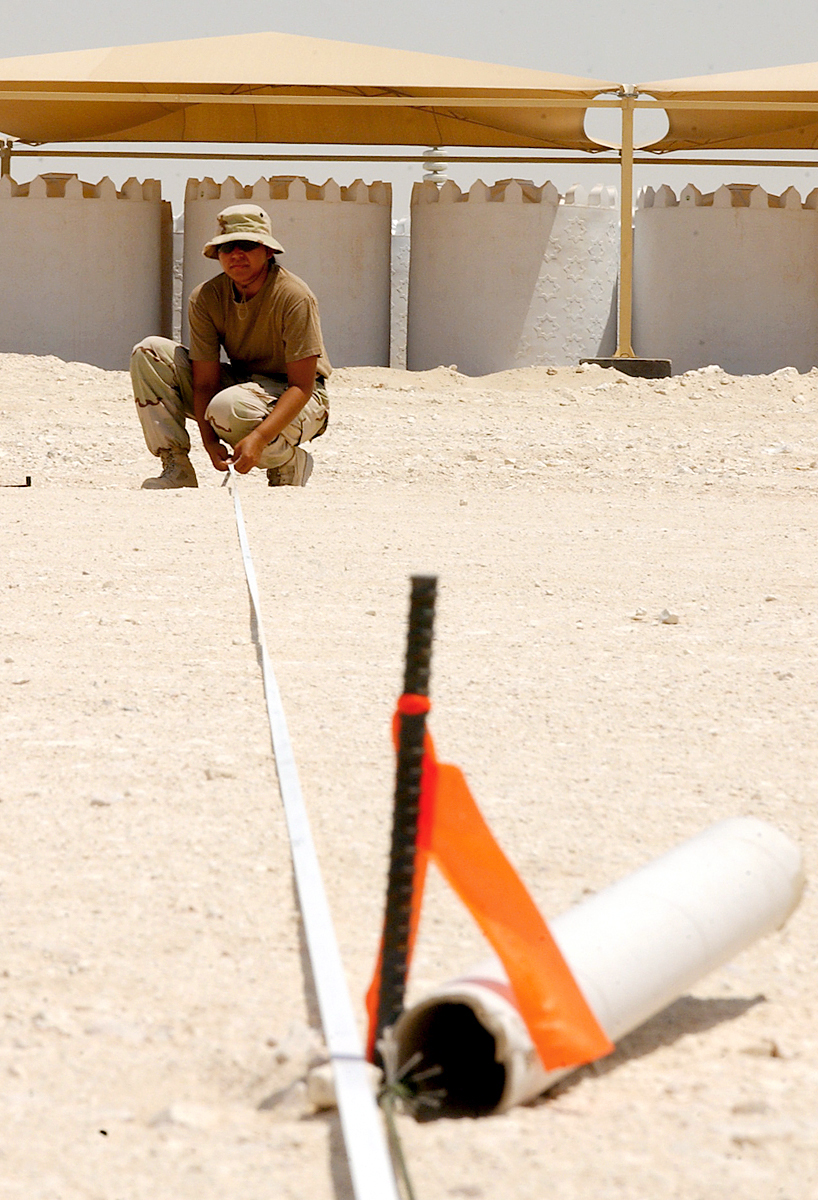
Measuring up

AL UDEID AIR BASE, Qatar -- Airman 1st Class Katrina Johnson measures one side of a future industrial park site where permanent structures will be built. Johnson is deployed with the 379th Air Expeditionary Wing here.